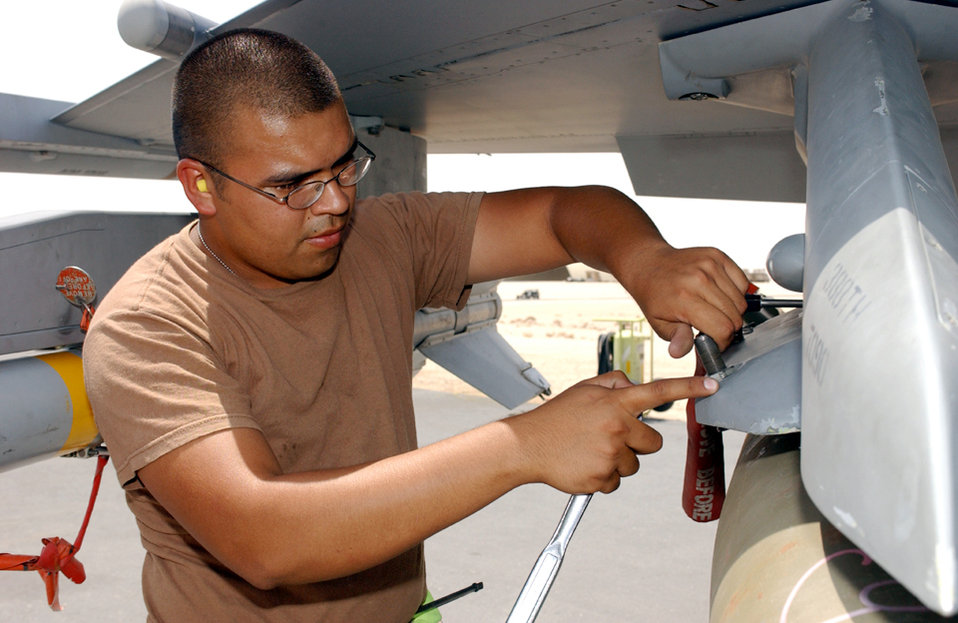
Unarming the Falcon

SOUTHWEST ASIA -- Senior Airman Alex Amaya prepares to remove a GBU-12 laser-guided bomb from an F-16 Fighting Falcon at a forward-deployed base supporting Operation Iraqi Freedom. Amaya is assigned to the 379th Expeditionary Aircraft Maintenance Squadron and is deployed from the 421st Fighter Squadron at Hill Air Force Base, Utah.